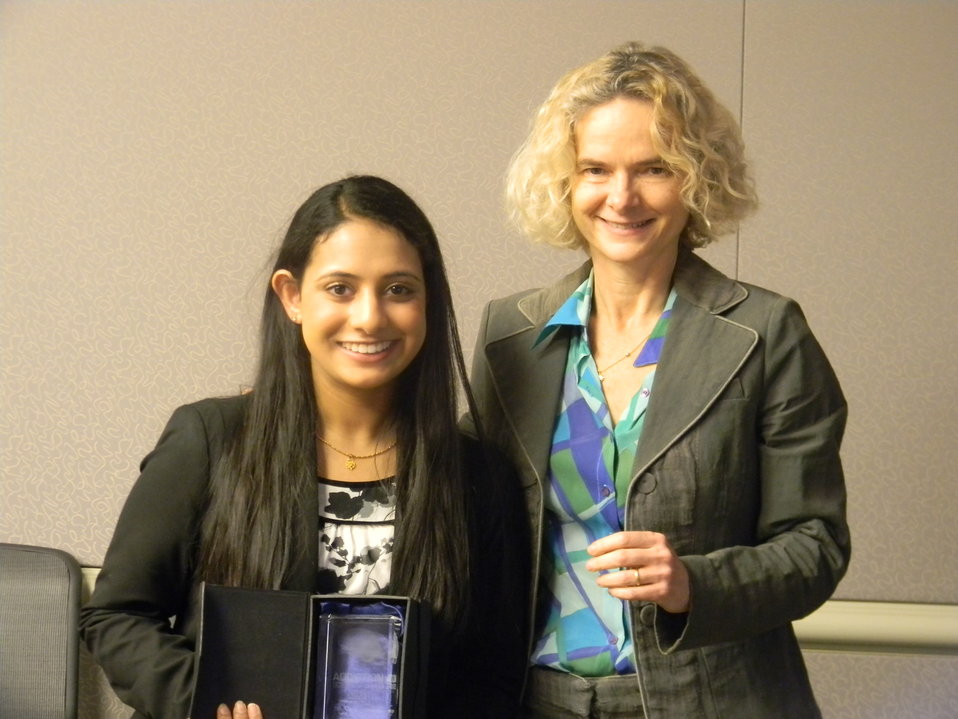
Yamini Naidu and NIDA Director Dr. Nora Volkow

2011 Addiction Science Award Winner Yamini Naidu (3rd place) and NIDA Director Dr. Nora Volkow